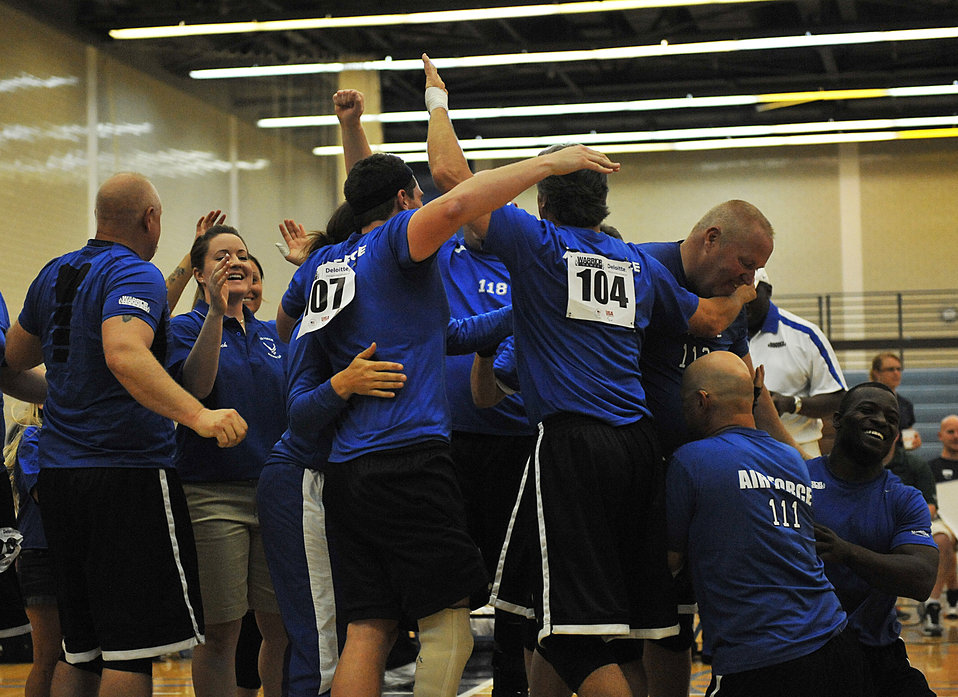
Warrior Games

Members of the Air Force sitting volleyball team celebrate after winning the bronze medal against the Special Operations Command team during Warrior Games 2012 at the U.S. Air Force Academy in Colorado Springs, Colo., May 3, 2012. Air Force won 25-12 and 25-20.